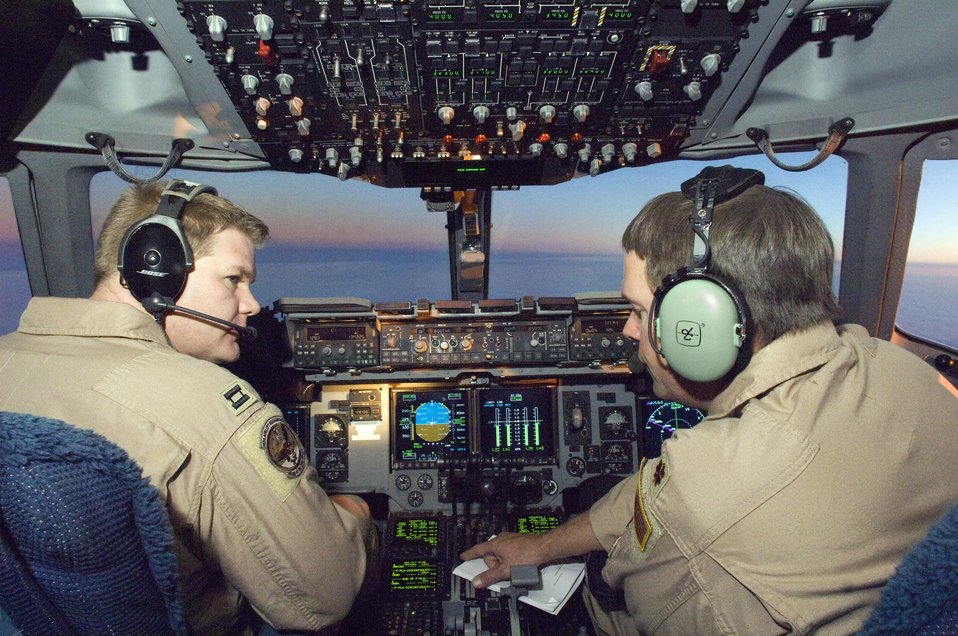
Air care

OVER IRAQ (AFPN) -- Maj. Eric Chancellor (right) and Capt. Brien Childress direct a C-17 Globemaster III during a mission over Iraq. The pilots are with the Air National Guard's 183 Airlift Squadron from Jackson, Miss. The unit's primary mission is to fly aeromedical evacuation missions.